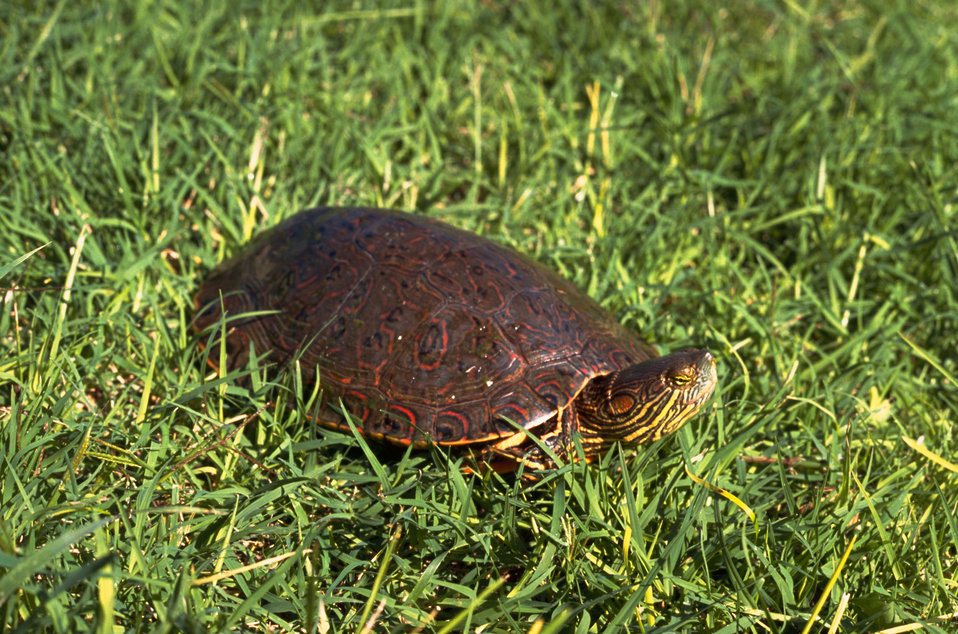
Big Bend Slider

Turtle